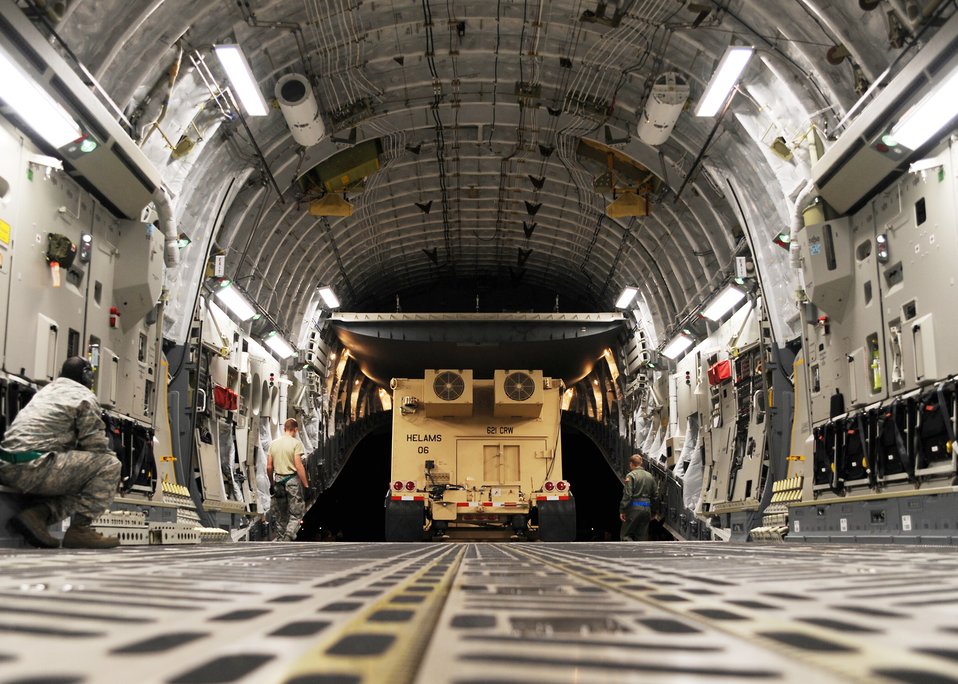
Haiti Humanitarian Effort

Equipment is unloaded from a C-17 Globemaster III in Port-au-Prince, Haiti, Jan. 15, 2010. Air Mobility Command is assisting the humanitarian relief effort in Haiti by bringing the assets necessary to run airfield operations, air traffic control, command and control, aerial port, maintenance, and security.